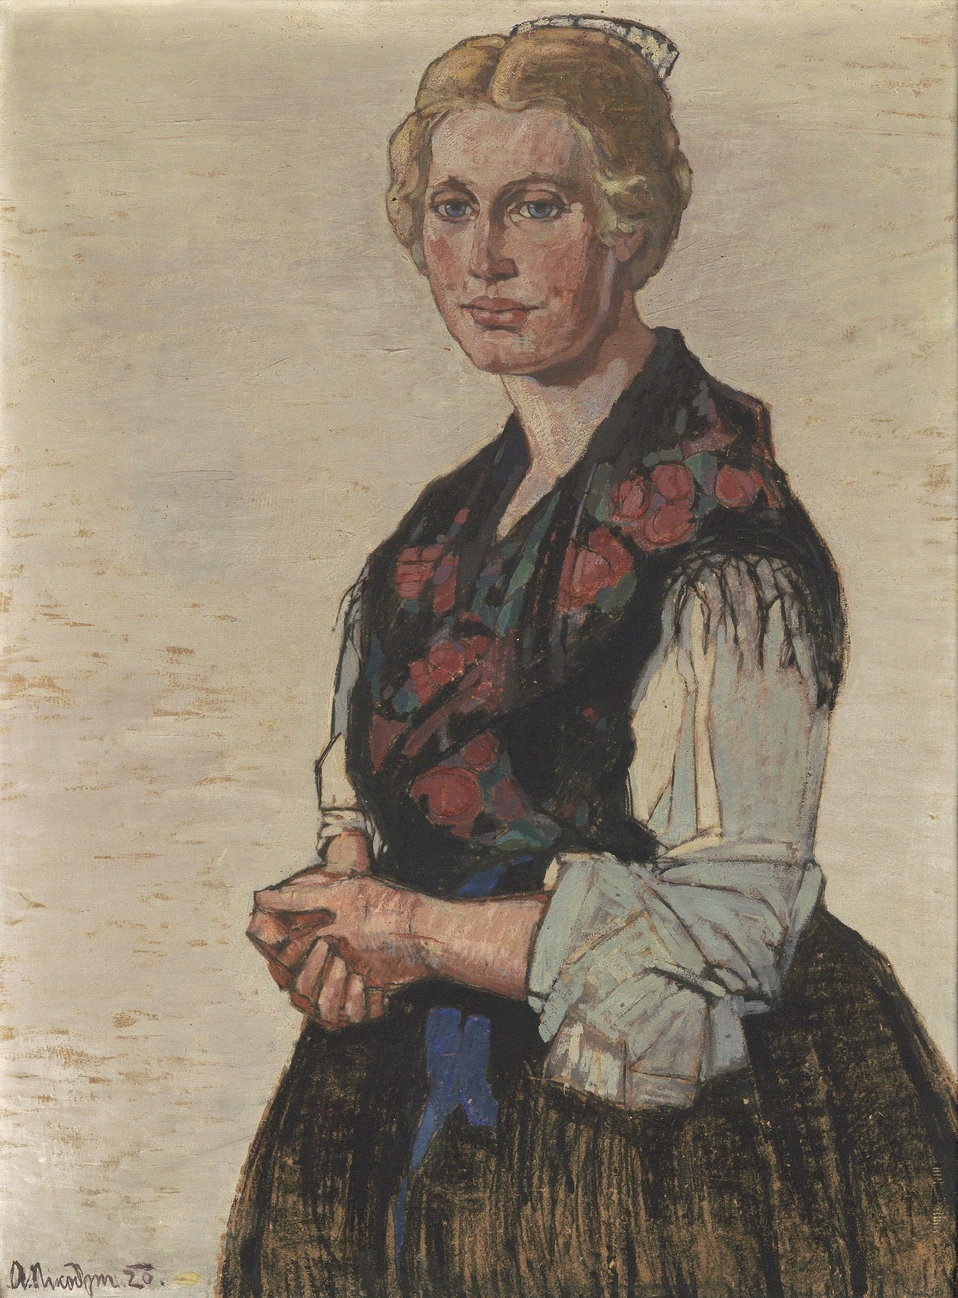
Artur Nikodem Mädl aus Seis 1920